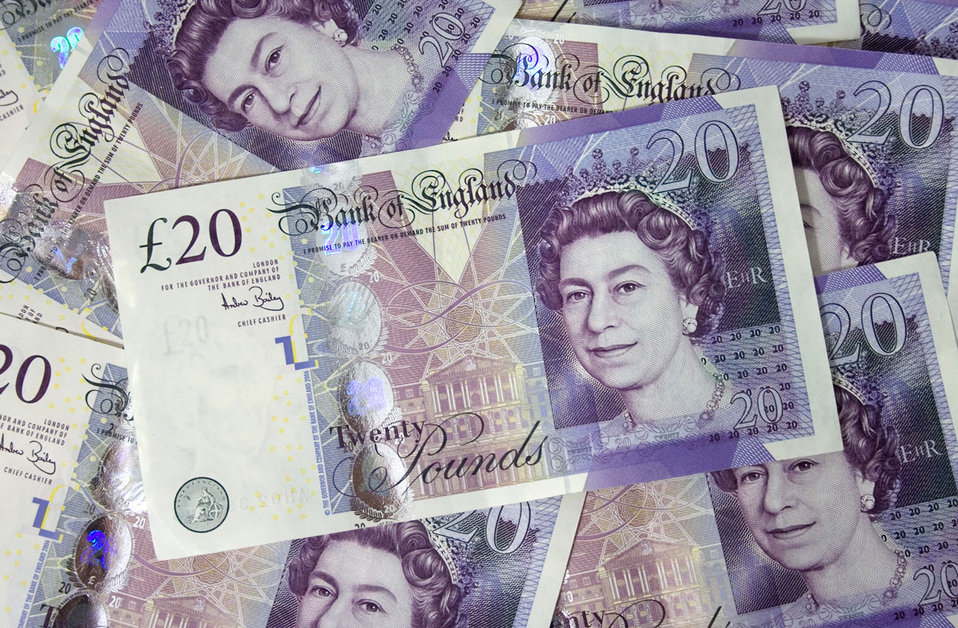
British bank notes

Several pound bills. new british 20 pounds bank notes..